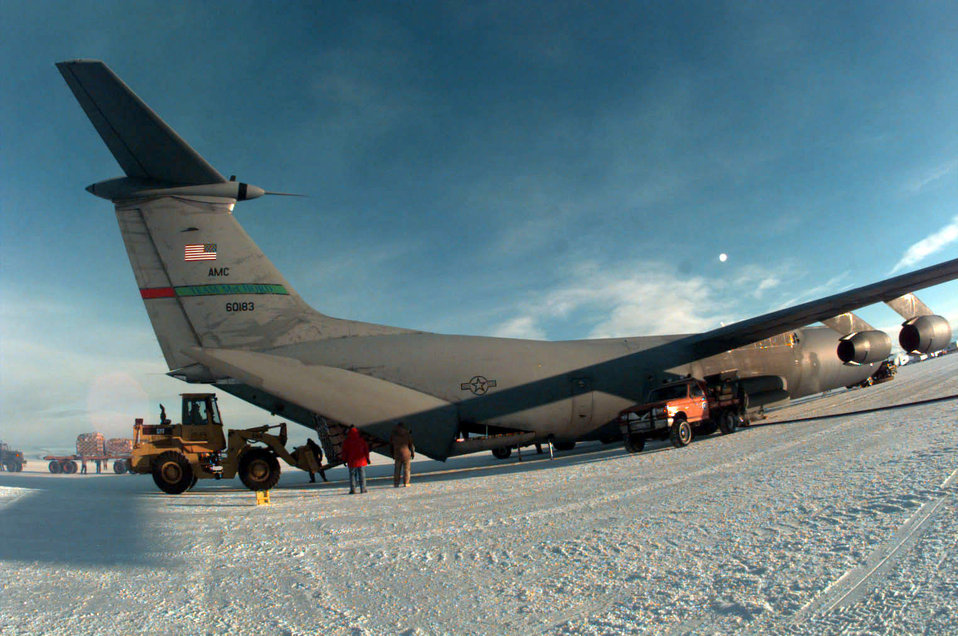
Deep freeze

MCMURDO STATION, Antarctica -- In this 1997 photo, cargo is offloaded from a C-141B Starlifter from McChord Air Force Base, Wash., while parked on a runway of ice here. The cargo and passengers transported by C-141s as part of Operation Deep Freeze were flown from New Zealand to Antarctica in support of scientific research at McMurdo and the South Pole.